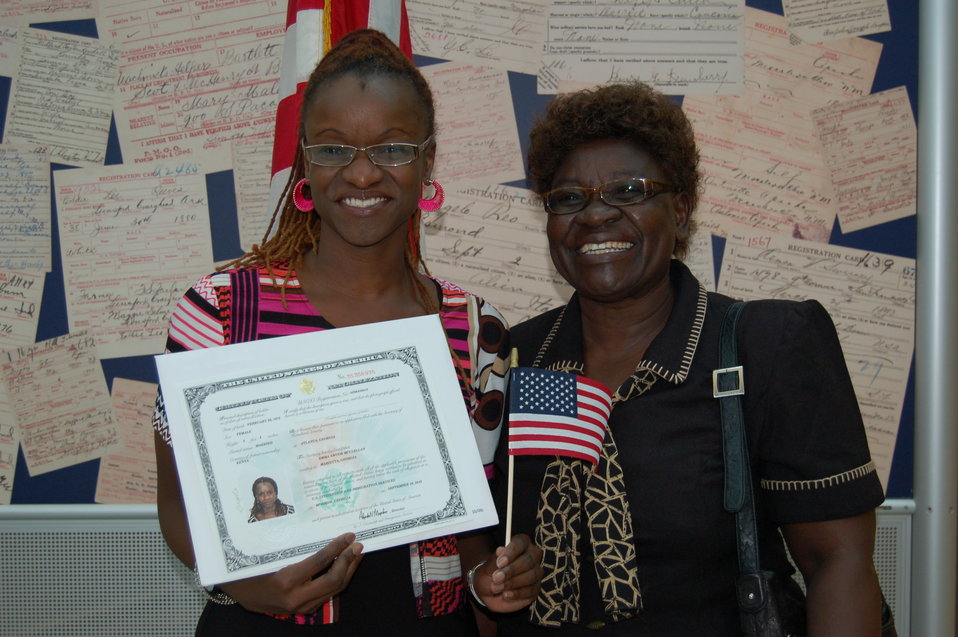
New Citizens